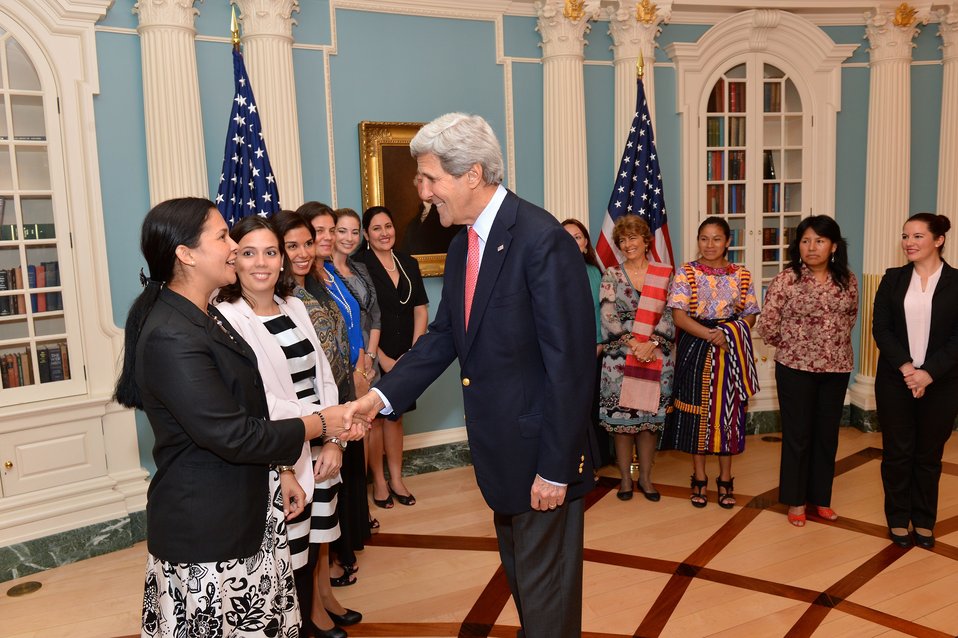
Secretary Kerry Meets With WEAmericas Entrepreneurship Group Participants

U.S. Secretary of State meets with women from the WEAmericas Entrepreneur Group at the U.S. Department of State in Washington, D.C., on May 9, 2014.